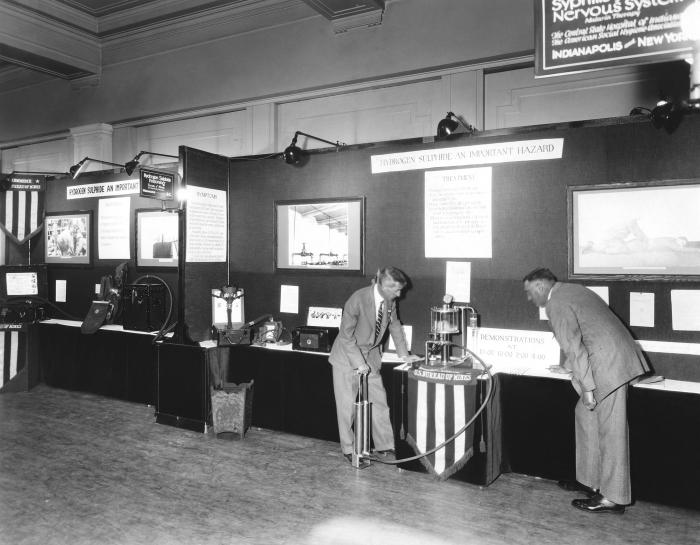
Provided by the Center for Disease Control's (CDC), National Institute for Occupational Safety and Health (NIOSH), this historic image depicted an exhibit produced by the Bureau of Mines, which was being displayed at a 1929, Portland, Oregon, American Medical Association (AMA) meeting. In this view, i.e., see PHIL 9712 for another view, two men appeared to be setting an air-quality measuring device.